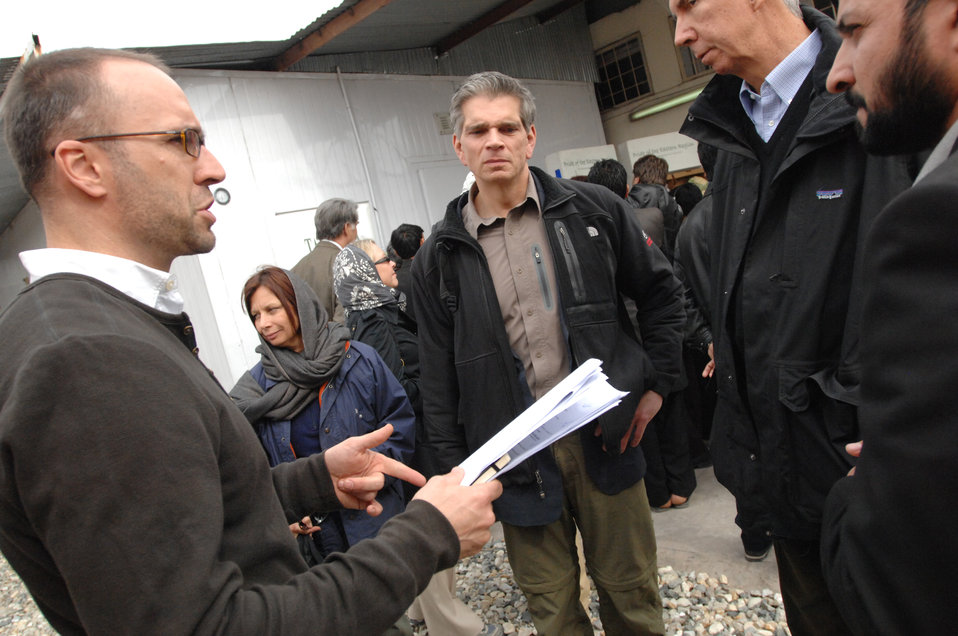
Shah

United States Agency for International Development (USAID) at the Surkh Rod vegetable packing facility in Nangarhar province on Wednesday, February 9, 2011. (S.K. Vemmer/Department of State)